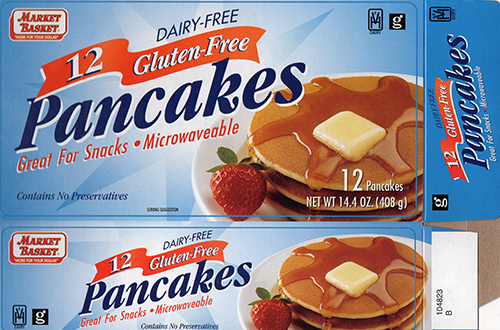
RECALLED – Product Description

May 19, 2014 – Product Recall – Middle East Bakery, Inc. Issues Allergy Alert on Undeclared Milk in Market Basket Dairy-free, Gluten-free Pancakes.